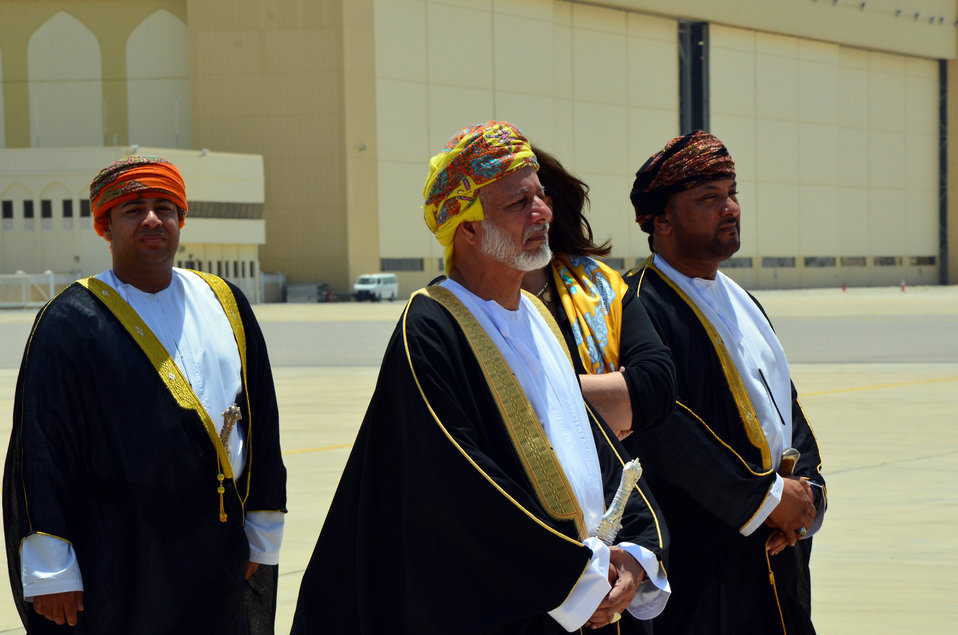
Omani Foreign Minister Yussef bin Alawi bin Abdullah Prepares To Greet Secretary Kerry

Omani Foreign Minister Yussef bin Alawi bin Abdullah prepares to greet U.S. Secretary of State John Kerry upon his arrival in Muscat, Oman, on May 21, 2013.